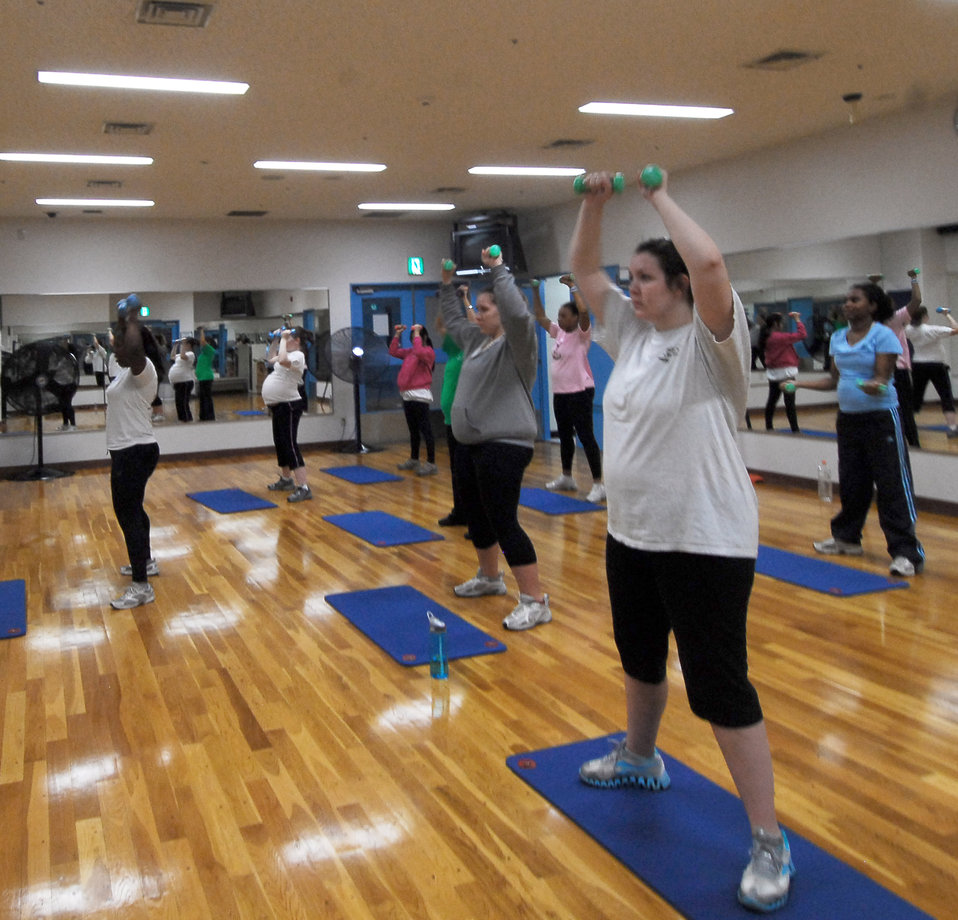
Fit moms

Staff Sgt. Treshawna Gwendo leads moms-to-be during the Fit Moms class Nov. 21, 2010, at Yakota Air Base, Japan. Sergeant Gwendo is a diet therapist at the 374th Aerospace Medicine Squadron.